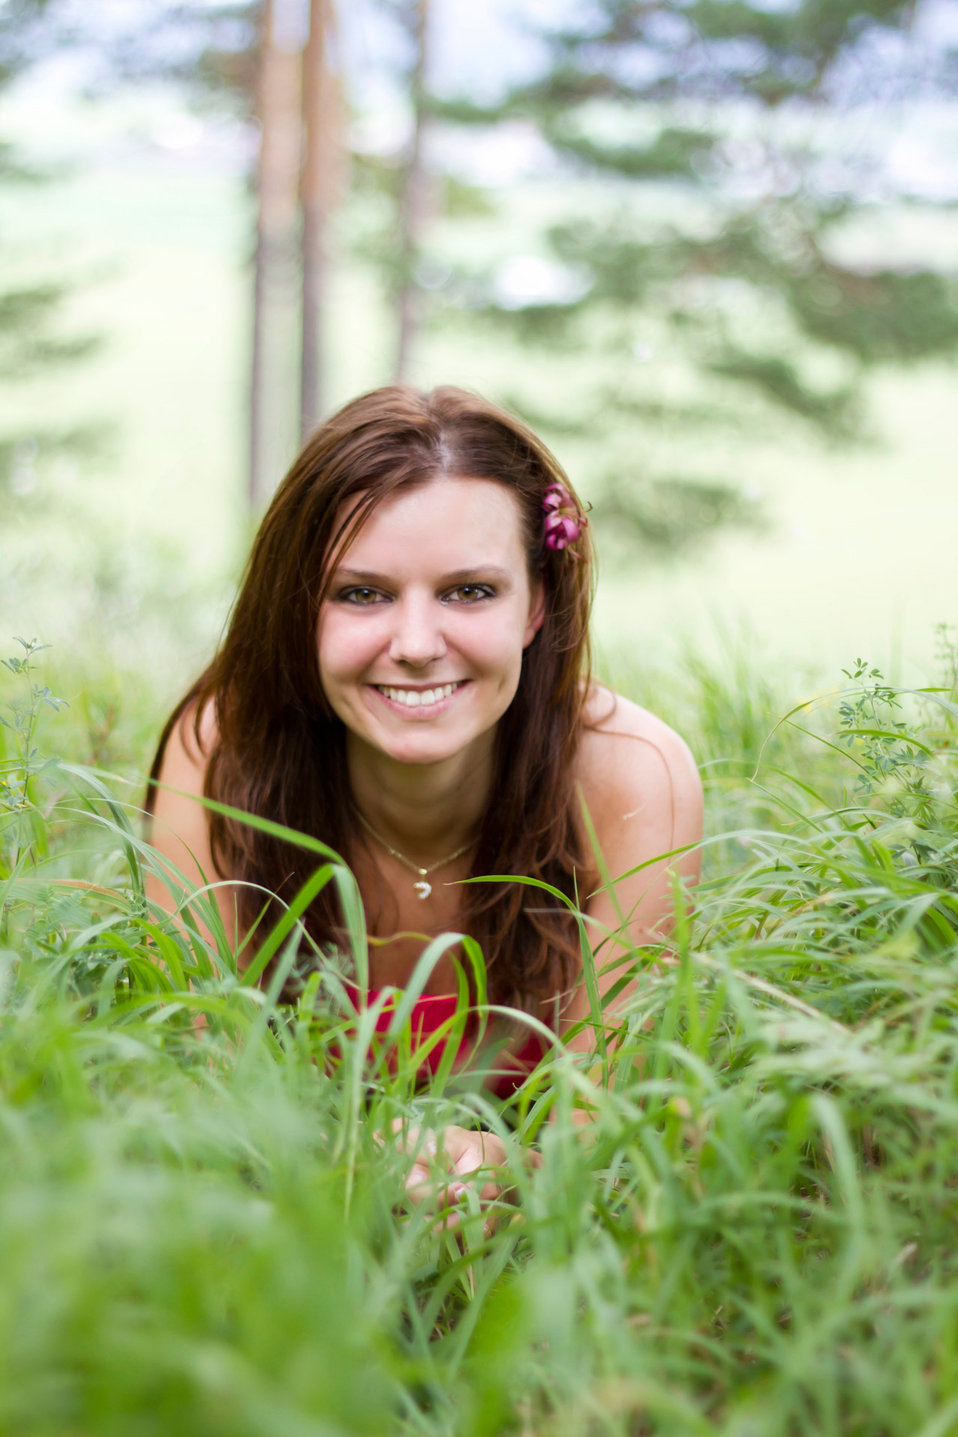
Young girl laying in the grass

Happy young girl.